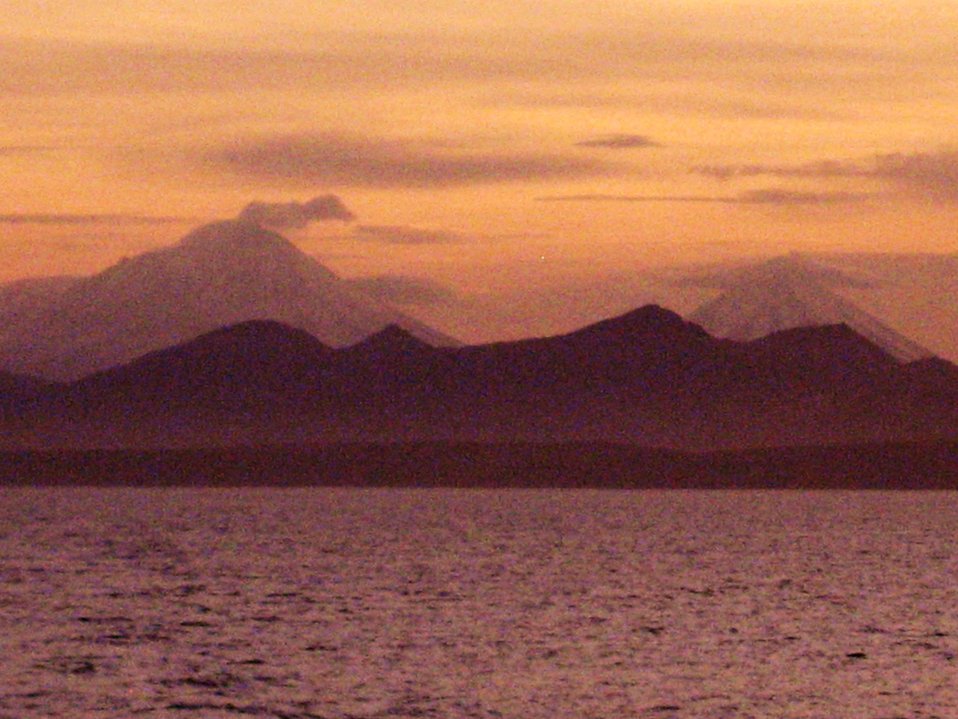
Alaska Peninsula sunset